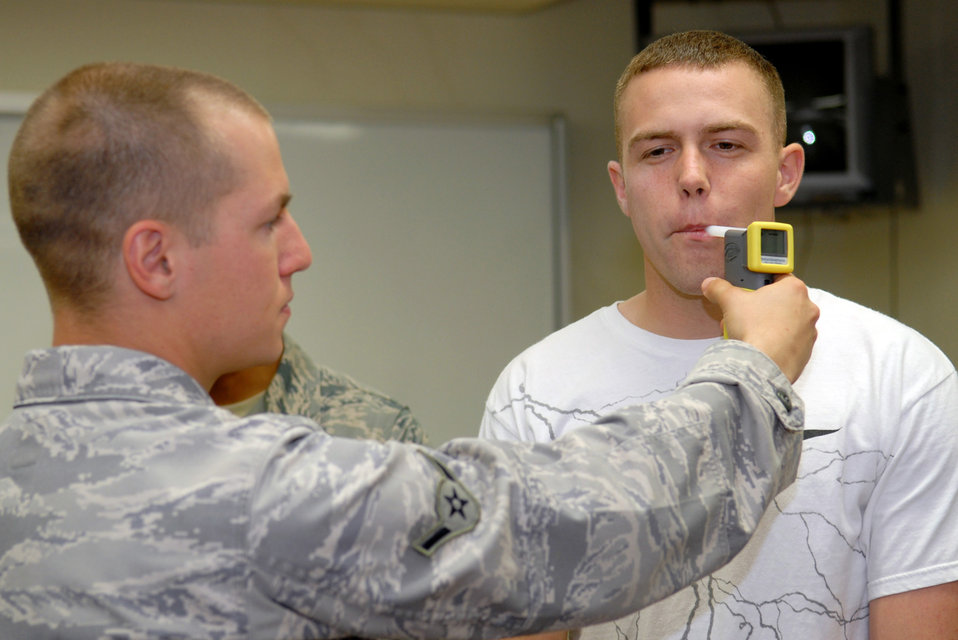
Spouses get taste of security forces' life

Airman 1st class Eric Barth and Airman 1st Class Philip Sneed demonstrate standard sobriety test procedures for spouses during the civilian police academy course May 27 at Kadena Air Base Japan. Airmen Barth and Sneed are both members of the 18th Security Forces Squadron.